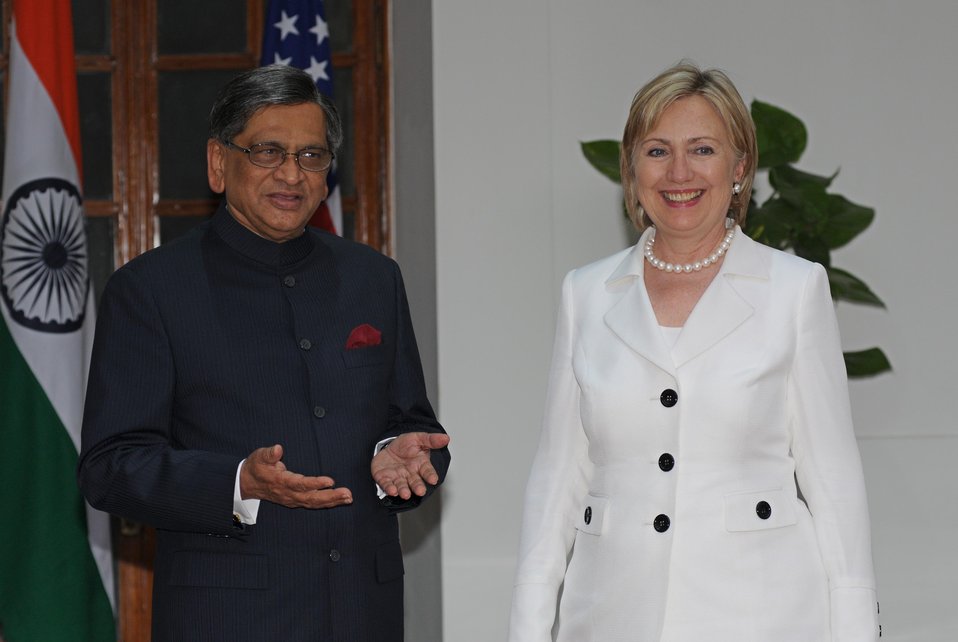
U.S., India Sign Bilateral Science and Technology Endowment Agreement

U.S. Secretary of State Hillary Rodham Clinton and Indian Minister of External Affairs S.M. Krishna after signing of a U.S.-India bilateral science and technology endowment agreement in New Delhi, India July 20, 2009.